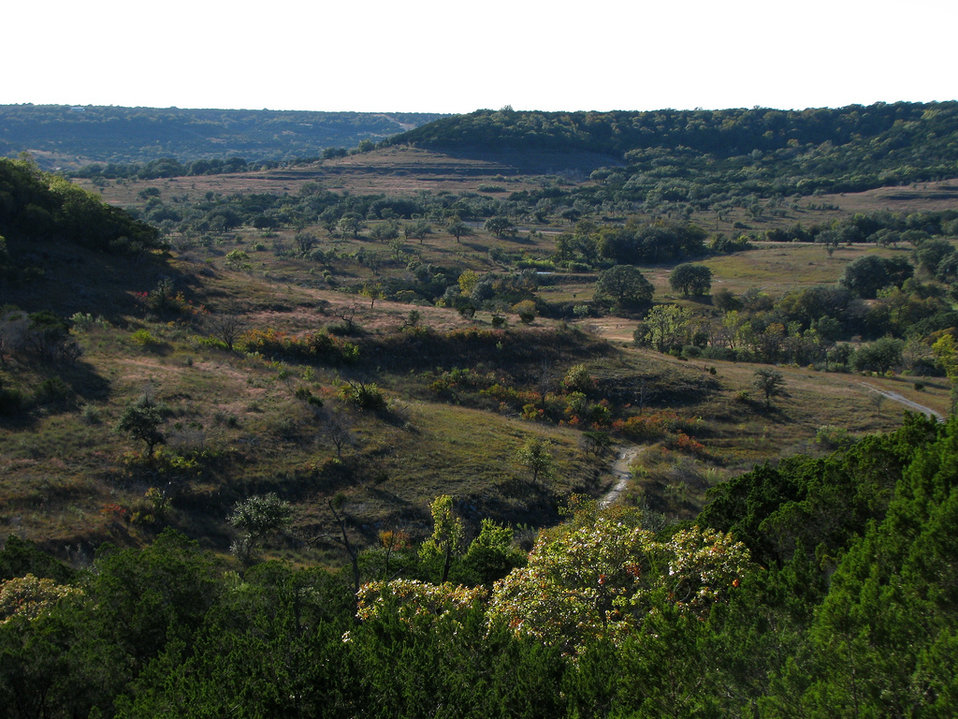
Balcones Canyonlands National Wildlife Refuge, TX
January 2011